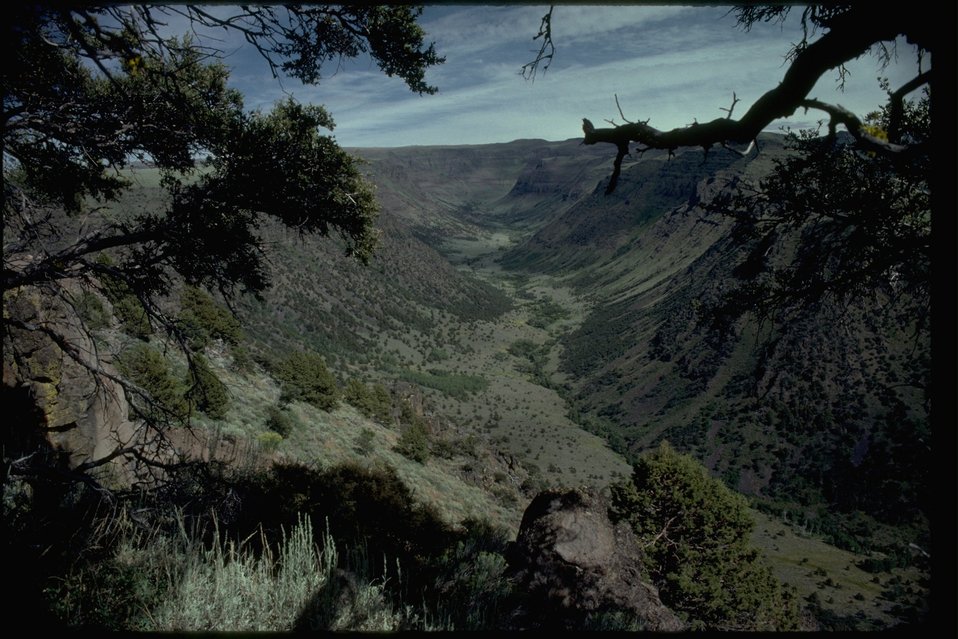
Big Indian Gorge along Steens Mountain, Oregon.